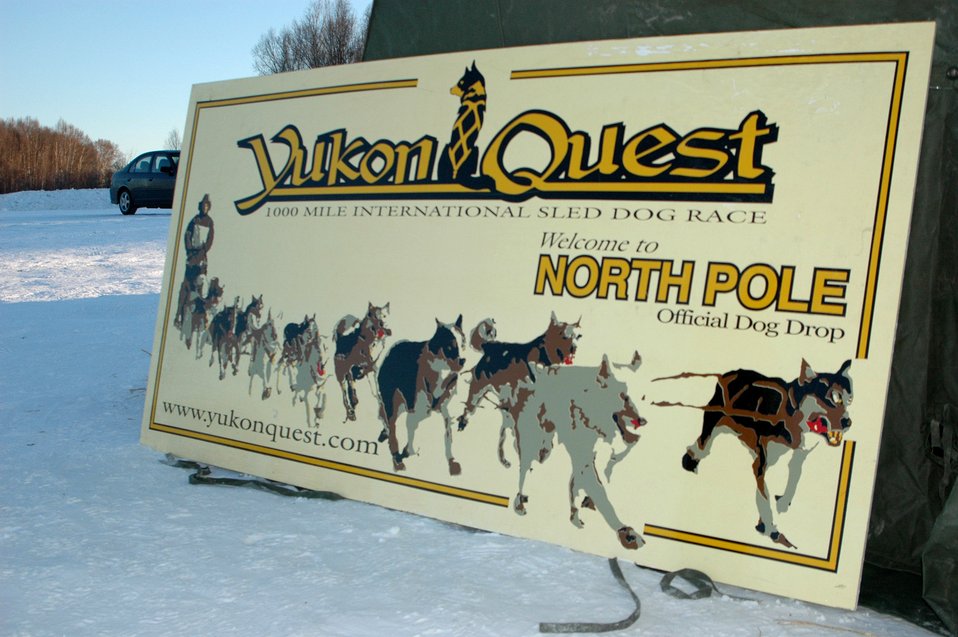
Eielson Airmen help keep mushers, dogs in race

The Dog Drop in North Pole is the last checkpoint for the Yukon Quest before the finish line in Fairbanks, Alaska. More than 160 Airmen braved below negative 40 degrees temperatures to help man the check-point for mushers and dog teams to rest and eat. The Yukon Quest is a 1,000-mile international dog sled race held annually in Alaska. Mushers race through territory from Whitehorse to Fairbanks.